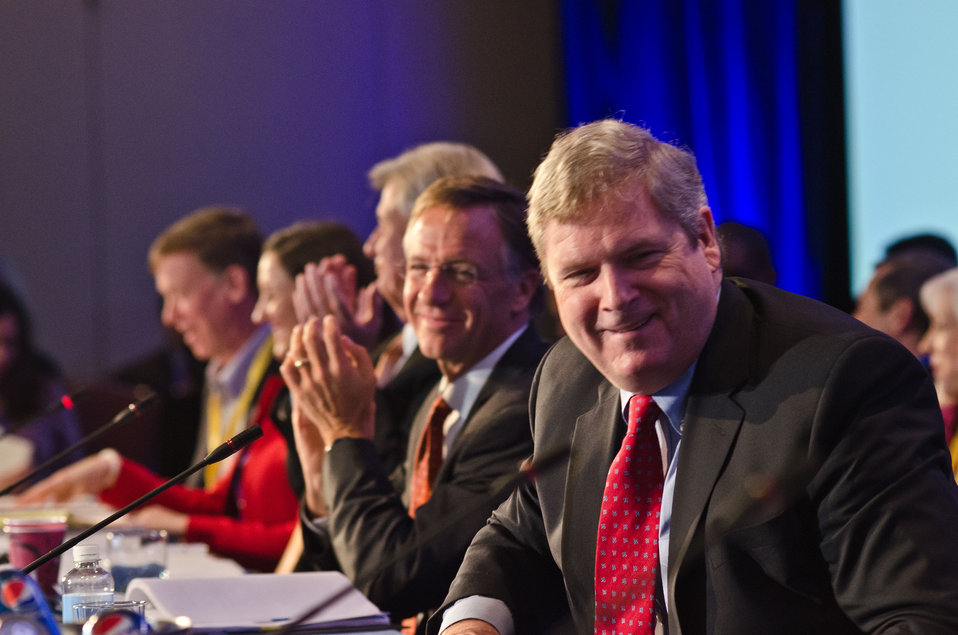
Agriculture Secretary Tom Vilsack was well received as the guest speaker at the National Governors Association Education, Early Childhood and Workforce Committee meeting in Washington, D.C., on Sunday, February 26, 2012.